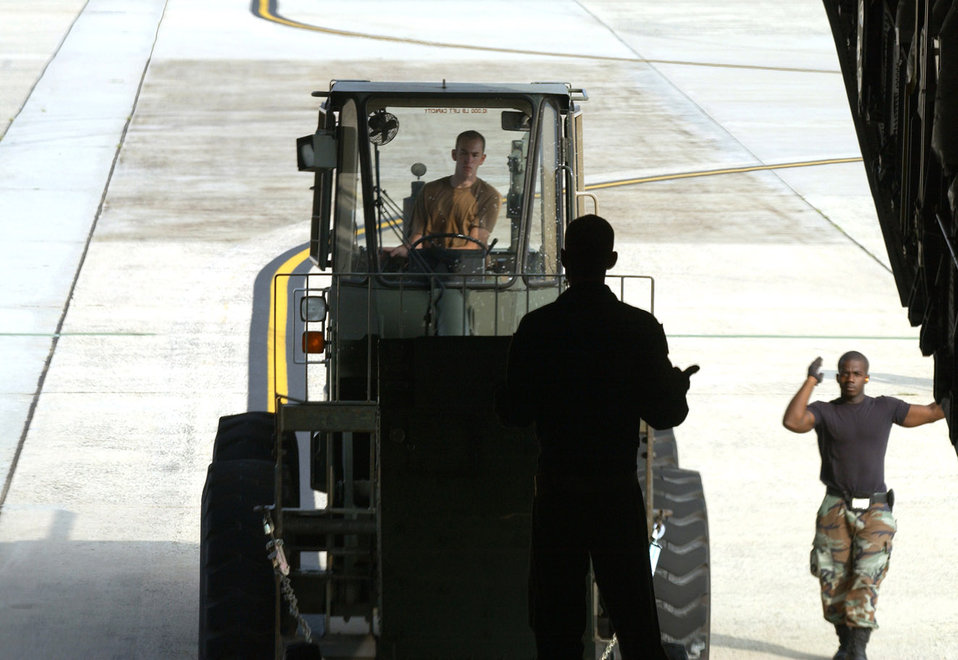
AMC response groups establish airfield operations for hurricane relief

MCGUIRE AIR FORCE BASE, N.J. -- Airmen with the 305th Aerial Port Squadron here load equipment onto a C-17 Globemaster III headed for the New Orleans airport Aug. 31 to assist in Hurricane Katrina relief efforts. Twenty-nine Airmen from McGuire's 621st Contingency Response Wing and 110,000 pounds of equipment departed here for the hurricane-devastated region.